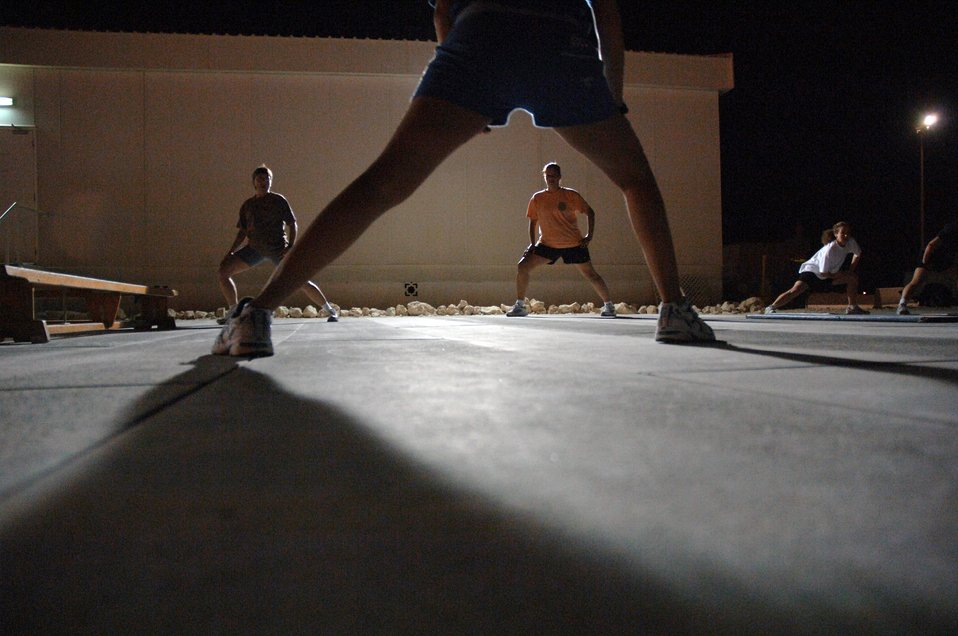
Operation Iraqi Freedom

SOUTHWEST ASIA (AFPN) -- Royal Air Force Corporal Lyn McCartney leads American, English and Australian airmen in stretching exercises before the start of a